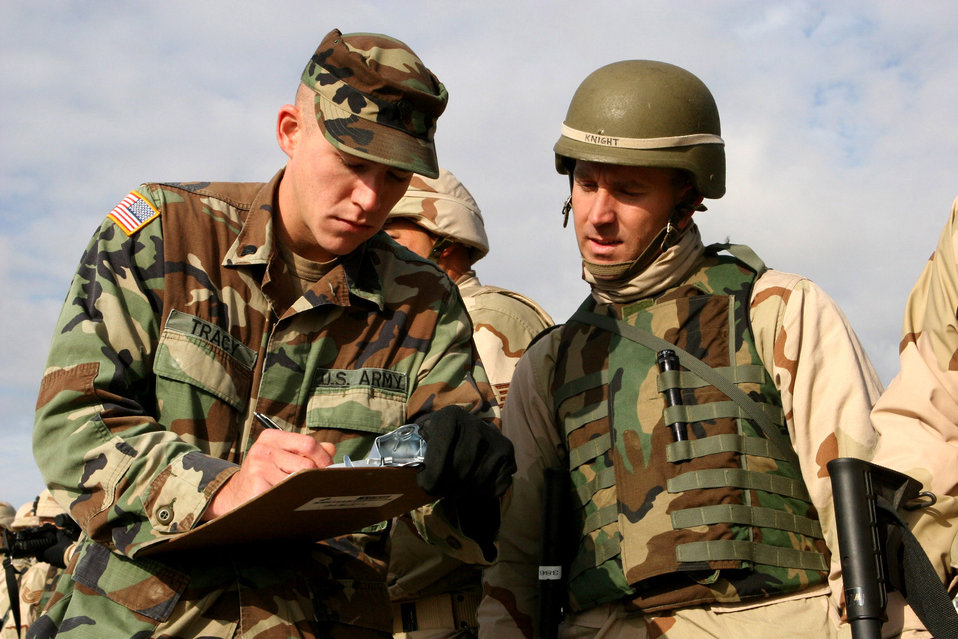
Airmen learn Army skills

CAMP ATTERBURY, Ind. (AFPN) -- Indiana Army National Guard Spc. Mike Tracy, a range operations specialist gathers information from Maj. Jason Knight during a qualification range Oct. 26.